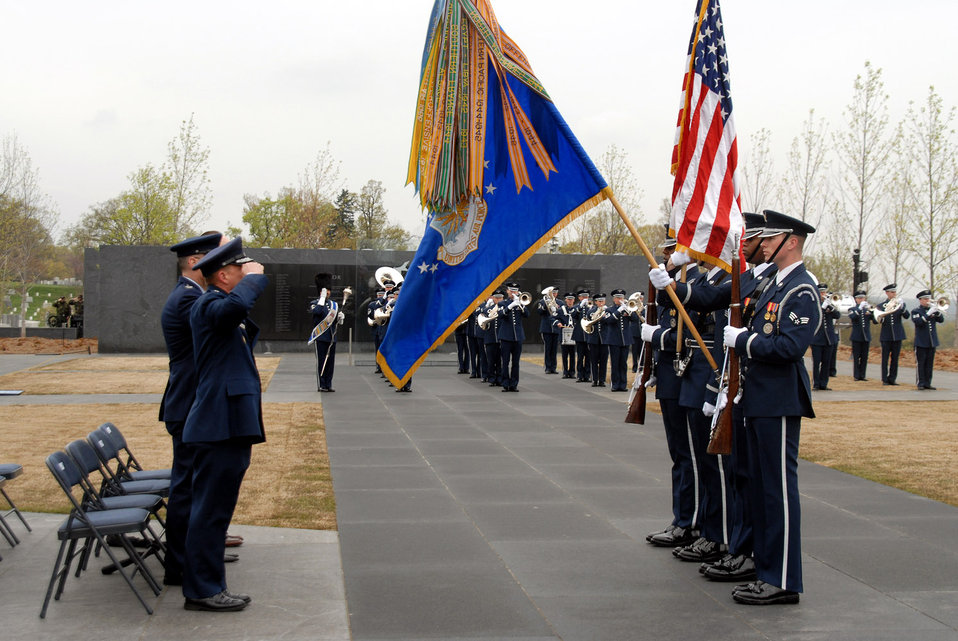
Air Force Review held at memorial

The Air Force Honor Guard presents the colors during the Air Force Review ceremony April 14 at the Air Force Memorial in Arlington, Va. Maj. Gen. Robert L. Smolen, the Air Force District of Washington commander, was the host of the event, as well as the reviewing official.